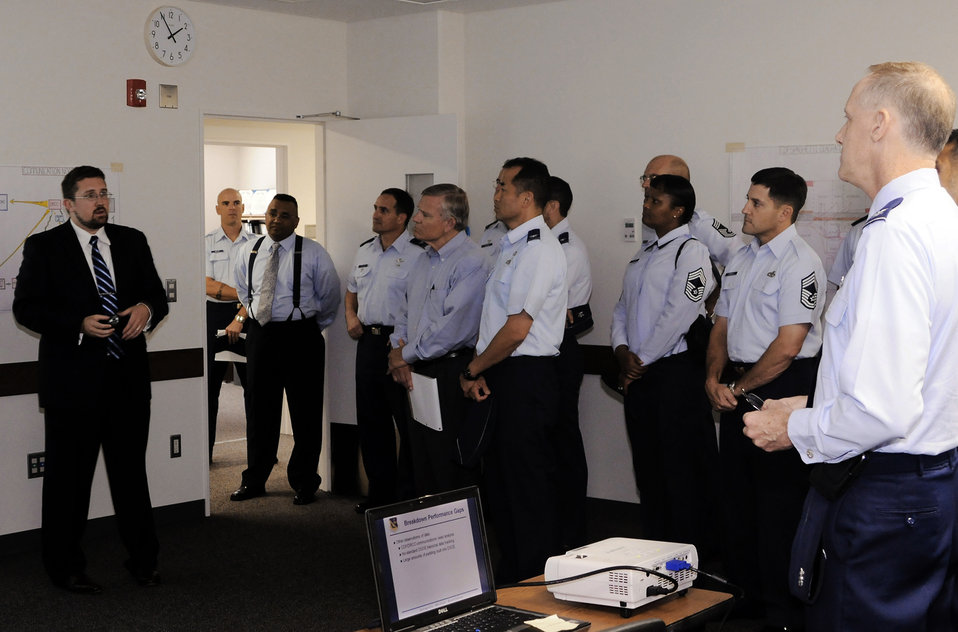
AFSO21 at Yakota

Jon Albaugh gives a presentation to leaders from both Kadena and Yokota air bases during the senior leader's course for Air Force Smart Operations for the 21st Century Sept. 20, 2010, at Yakota Air Base, Japan. Mr. Albaugh is the 374th Airlift Wing AFSO21 director.